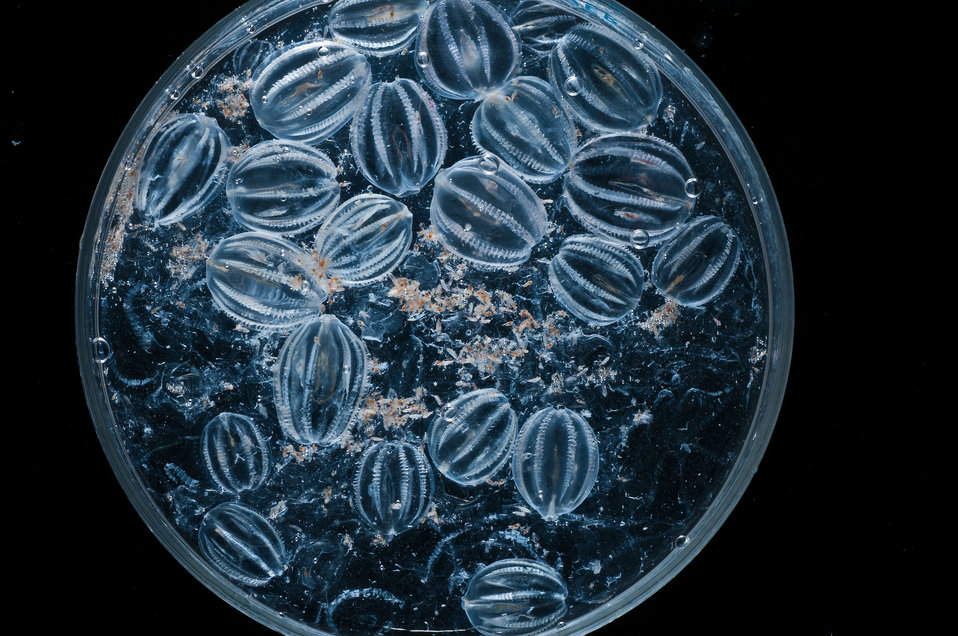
August 9, 2011 From sea or space?

Closeup of zoo plankton collected on August 9, about 4 nautical miles offshore (a nautical mile is a little further than a mile on land).